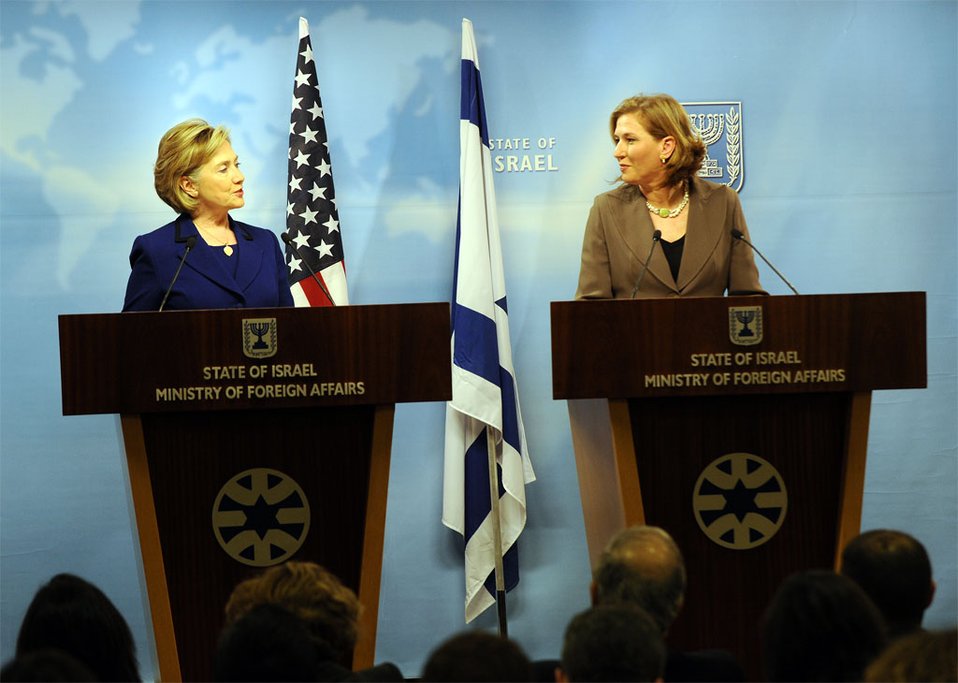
Secretary Clinton With Israeli Foreign Minister

U.S. Secretary of State Hillary Rodham Clinton at the Foreign Ministry Press Conference following meeting with Foreign Minister Tzippi Livni in Jerusalem March 3, 2009